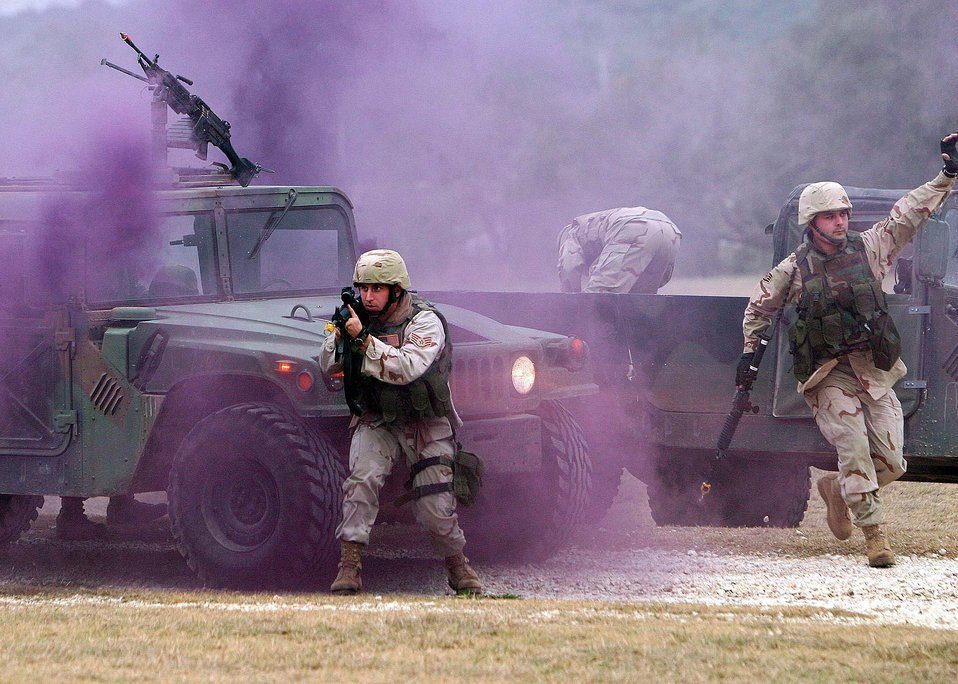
Deployment training

CAMP BULLIS, Texas -- Airmen participate in a Basic Combat Convoy Course here to train in the combat-type skills they will need during convoy operations in Iraq. In Iraq, Airmen help Soldiers and Marines run convoys throughout the country. More than 1,000 transportation, security forces, medical and personnel Airmen trained to help provide security.